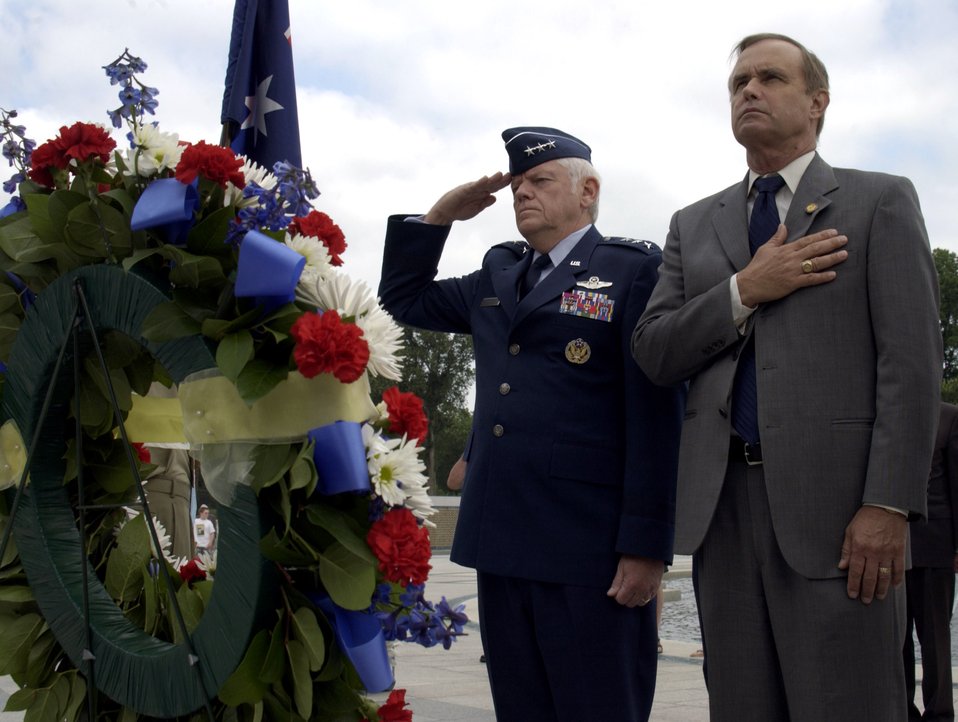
Fallen Bakers Creek servicemembers honored at WWII Memorial

Air Force Assistant Vice Chief of Staff Lt. Gen. Arthur Lichte and Californial Congressman Brian Bilbray pay their respects as they present a wreath at the World War II Memorial June 14. The event commemorated the 64th anniversary of the Bakers Creek air crash in Australia in which 40 American servicemembers lost their lives.